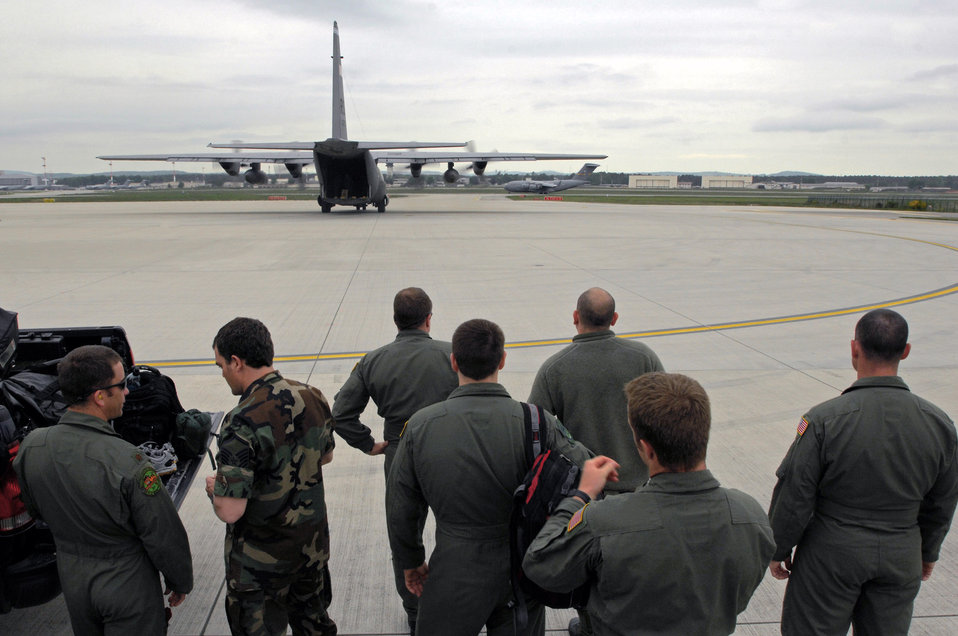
Loading up to support NASA

Pararescuemen stand by as a C-130 Hercules from Ramstein Air Base, Germany, taxies onto the cargo pad May 9. The Airmen from the 101st Expeditionary Rescue Squadron of the New York Air National Guard loaded the plane with lifesaving equipment to support NASA's launch of Space Shuttle Atlantis May 11.